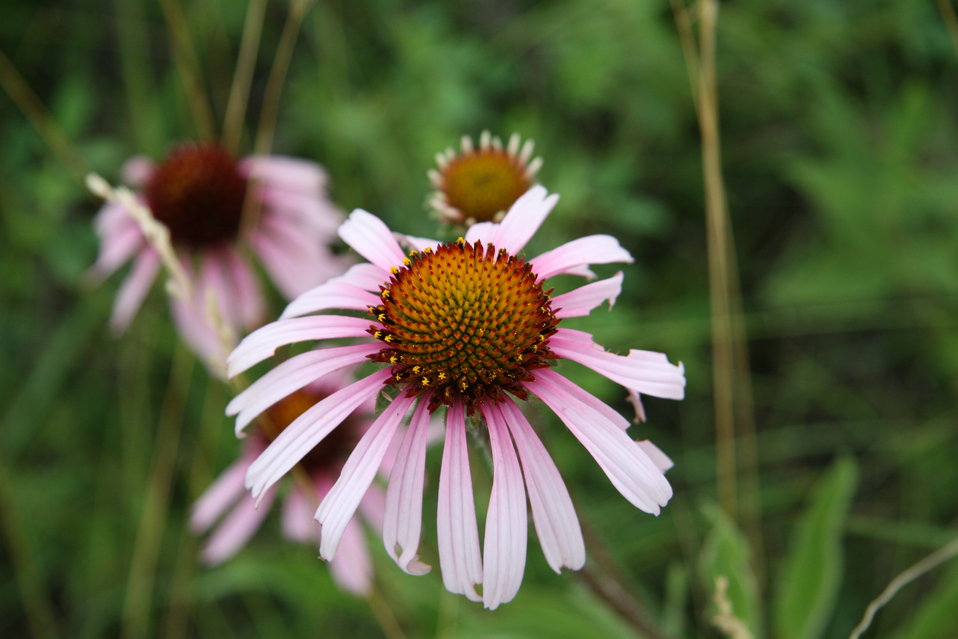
Wildflower Walk Program

Purple Coneflower at Des Lacs National Wildlife Refuge.